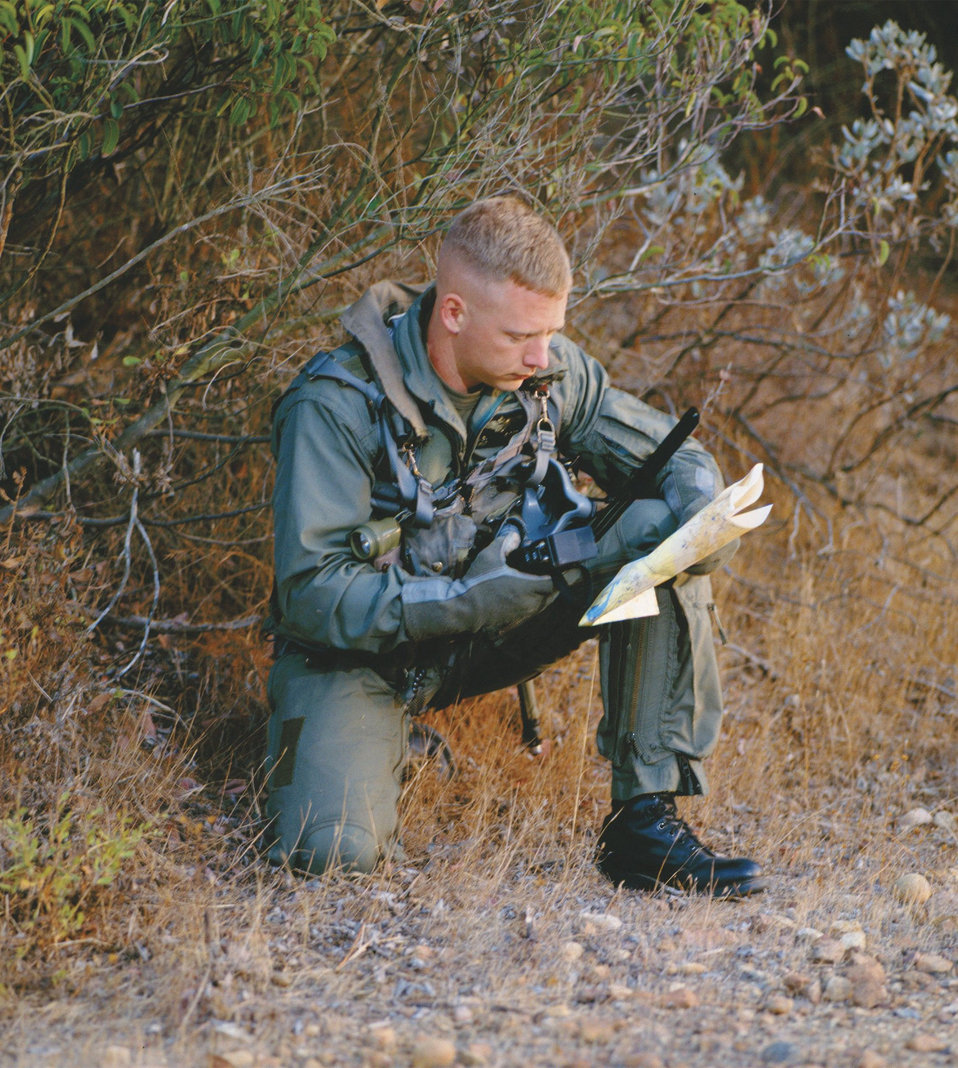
Radio program enables speedy personnel recovery

An Airman tests an early iteration of the Combat Survivor Evader Locator Radio in California. Officials from the Boeing Corp. and the Electronic Systems Center delivered the 20,000th CSEL radio to operators this fall and are on track to deliver 20,000 more.